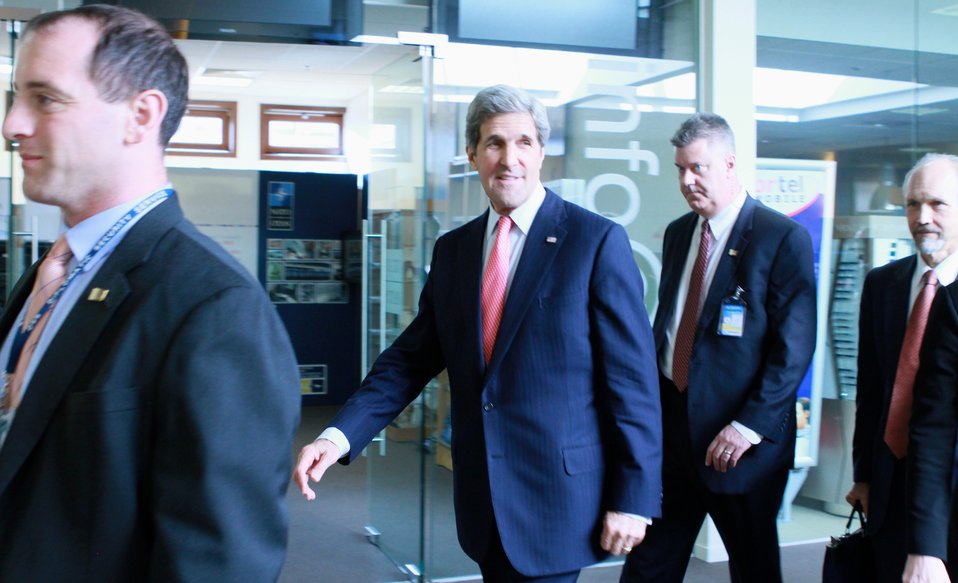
Secretary Kerry Walks to a Meeting With ISAF Countries

U.S. Secretary of State John Kerry walks to meet with ISAF Countries after his press conference at the NATO Foreign Ministerial in Brussels, Belgium, on April 23, 2013.